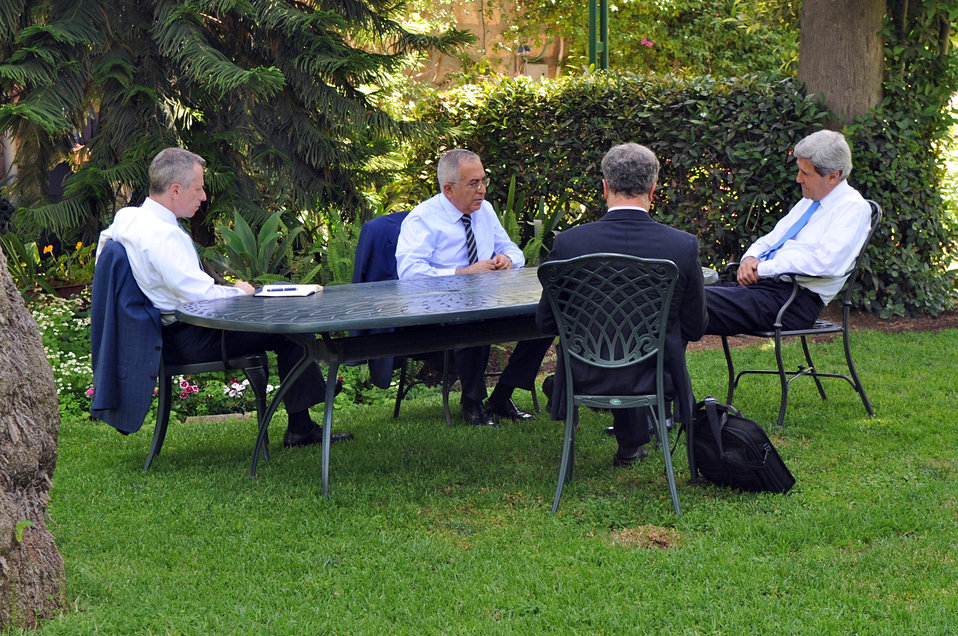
Secretary Kerry Meets With Palestinian Authority Prime Minister Fayyad

U.S. Secretary of State John Kerry and Palestinian Authority Prime Minister Salam Fayyad meet outdoors at the U.S. Consulate General in Jerusalem on May 24, 2013. Joining the discussion are U.S. Consul General Michael Ratney and Deputy Special Envoy for Middle East Peace Process Frank Lowenstein.